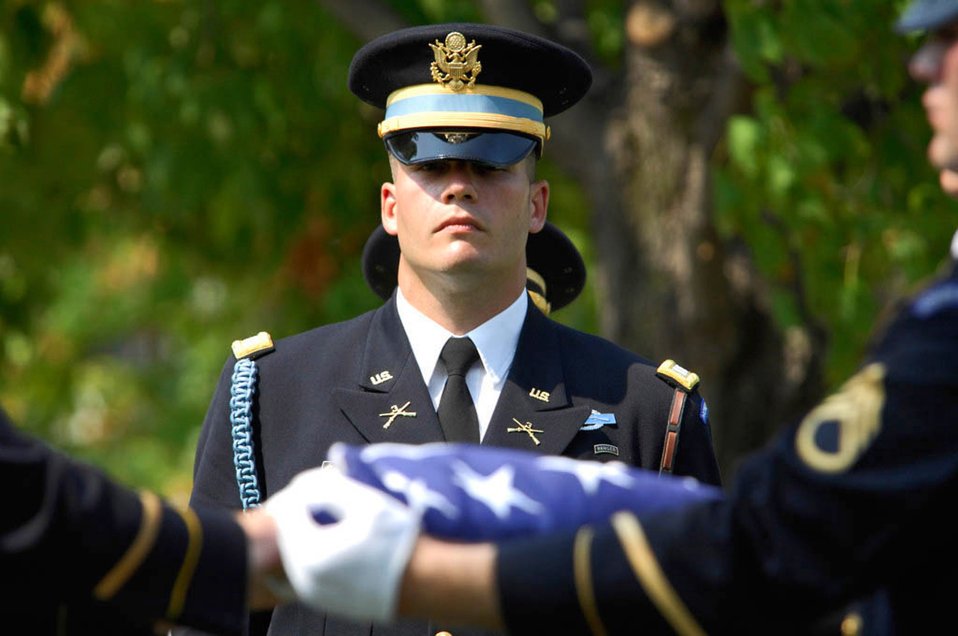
World War II B-24 pilot's remains laid to rest at Arlington

Army Color Guard members fold a flag from the casket of 2nd Lt. Harold E. Hoskin during a burial ceremony Sept. 7 at Arlington National Cemetery in Virginia. Lieutenant Hoskin was one of five men who were flying in a B-24 Liberator that crashed while on a test flight Dec. 21, 1943, out of Ladd Field in Fairbanks, Alaska. Lieutenant Hoskin's remains were discovered in August 2006 and identified in April 2007.